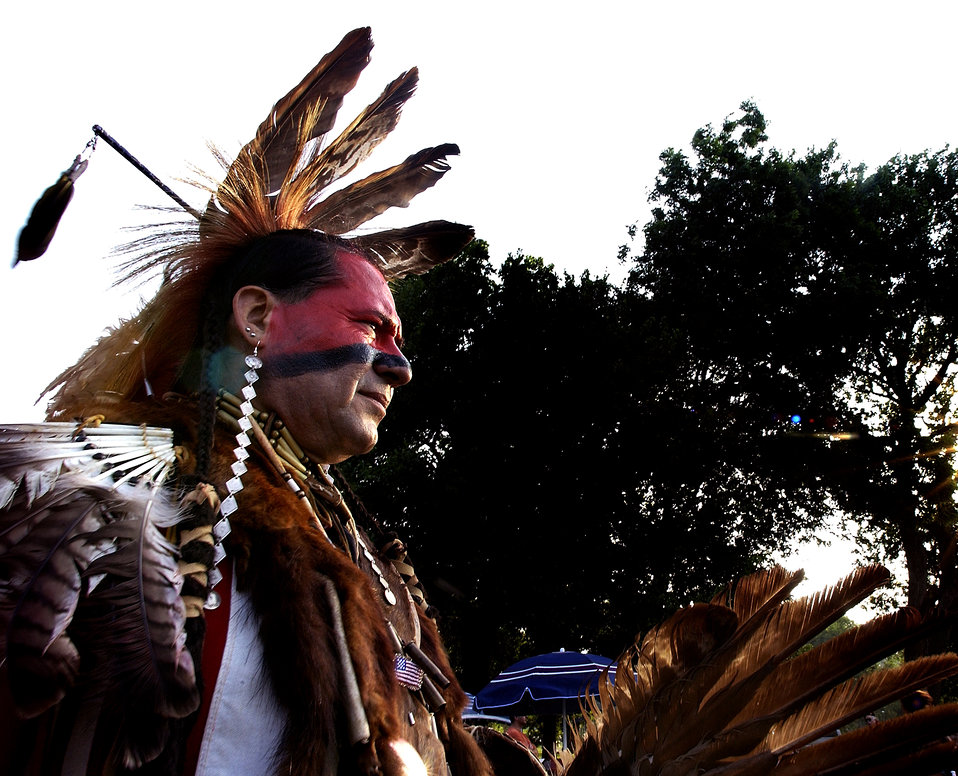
Preparing for the powwow

MIDWEST CITY, Okla. -- After painting his face, Eddie